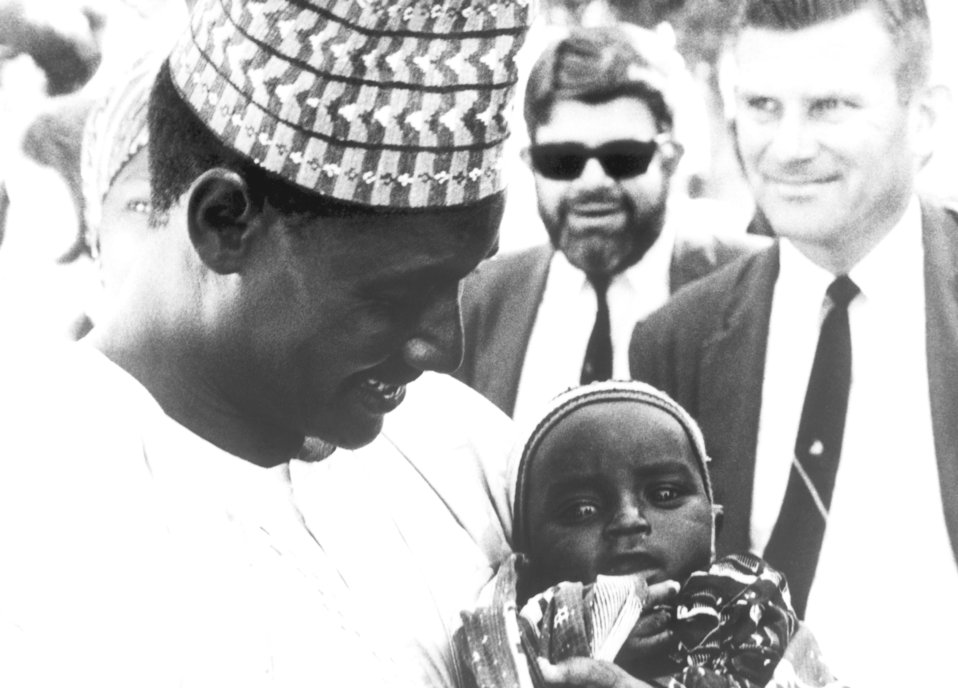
A father and child during the smallpox eradication efforts of the 1960's.